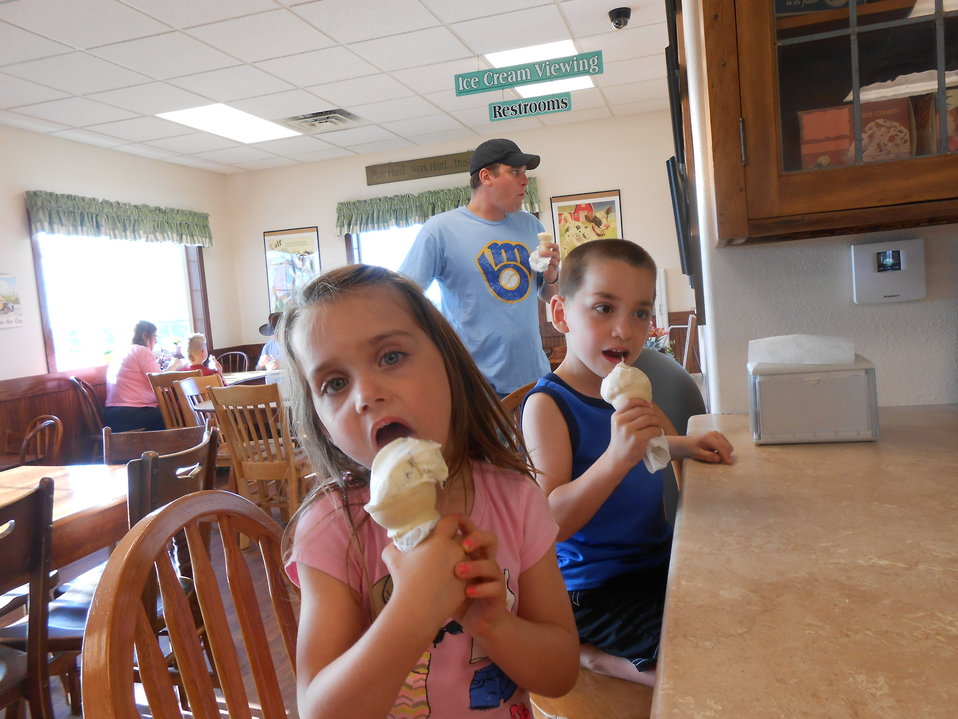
Twins Katrina and Will Edwards, both age 5, and their father Tim dig into ice cream at the Kelley County Creamery in Fond du Lac, Wisconsin. The creamery started operations with assistance from two USDA Value Added Producer grants.